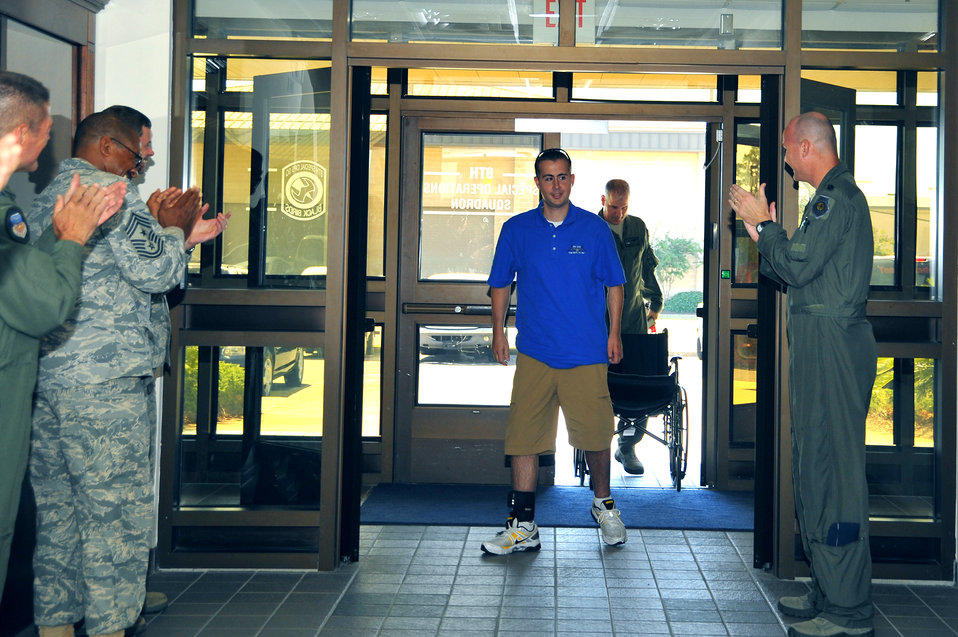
SSgt Curtis

Staff Sgt. Chris Curtis is greeted by 1st Special Operations Wing and 8th Special Operations Squadron leaders as he walks through the doors of the 8th SOS Oct. 8, 2010, at Hurlburt Field, Fla. Sergeant Curtis was a flight engineer on a CV-22 Osprey that crashed in the Zabul province of Afghanistan April 8, 2010, leaving him with significant blood loss and multiple fractures to his back, face, legs, left arm and pelvis. Sergeant Curtis is assigned to the 8th Special Operations Squadron.